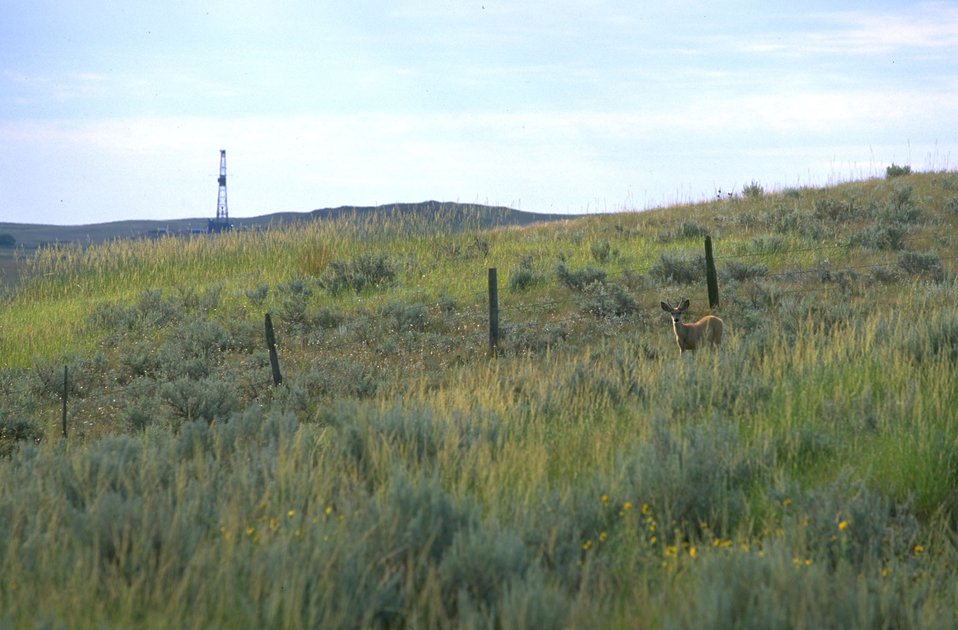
Drilling rig with mule deer in the foreground